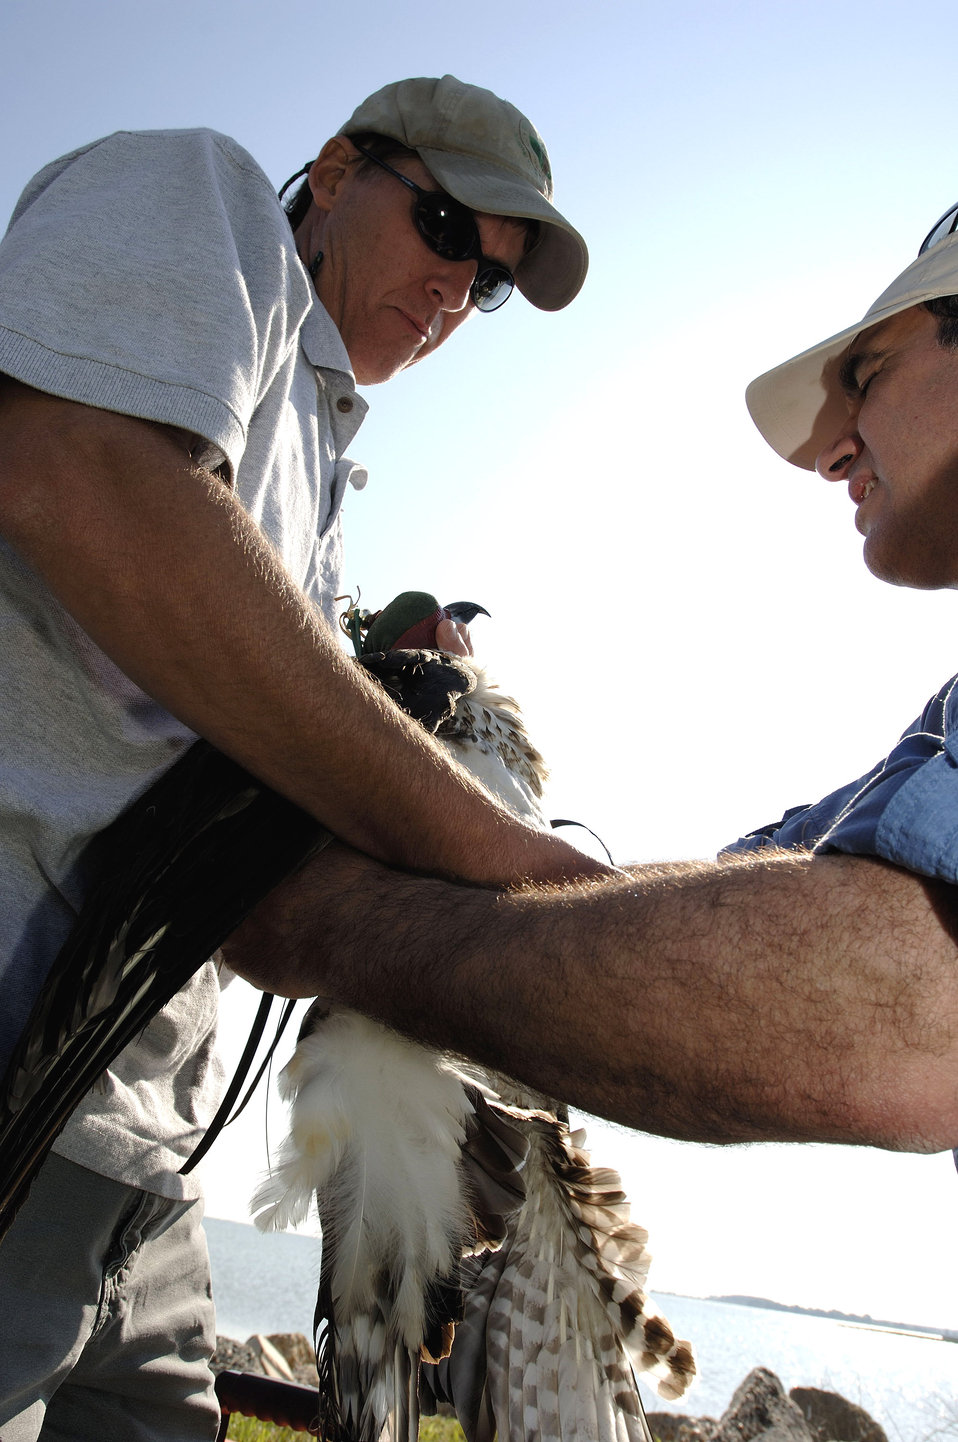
Osprey tracking

Brian Dorr of the U.S. Department of Agriculture holds an osprey as Mark Martell of the Minnesota Audubon Society fits it with a tracking device at Langley Air Force Base, Va., on Wednesday, May 17, 2006.. The department is collecting, tagging and tracking the birds to reduce conflicts with base aircraft.